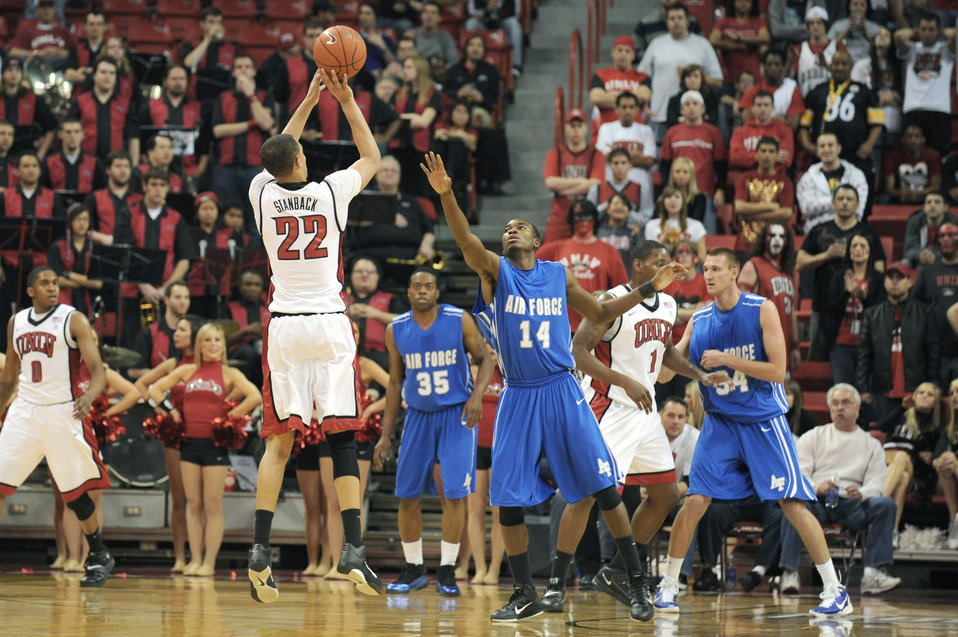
Falcons versus Rebels

Runnin' Rebels junior guard Chase Stanback shoots a three-point shot as Falcons sophomore guard Michael Lyons plays defense Feb. 15, 2011, at the Thomas and Mack Center in Las Vegas, Nev. The Air Force Falcons came up short against UNLV 49-42, making their record 13-11 overall and 4-7 in the Mountain West Conference.